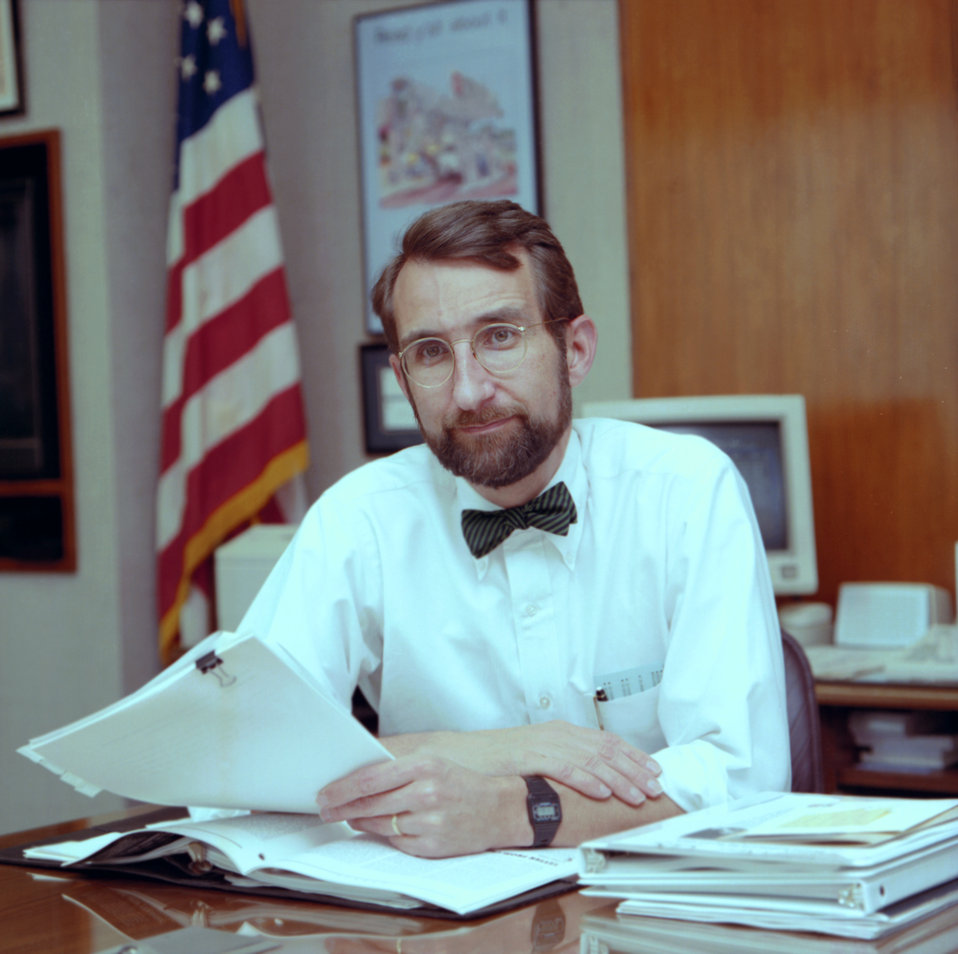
This photograph depicted one of the Centers for Disease Control's (CDC) former Directors, William L. Roper, M.D., M.P.H., who was the organization's Director from 1990 until 1993. In Dr. Roper's own words, 'Overall, efforts at CDC during 1990--1993 were focused on strengthening the role of public health in the nation's health system and emphasizing the value of prevention as the essential path to good health. By strengthening relationships with public health partners, building new partnerships with the private sector, and increasing the diversity of CDC's workforce, CDC became better equipped to fulfill its role as the nation's prevention agency.'